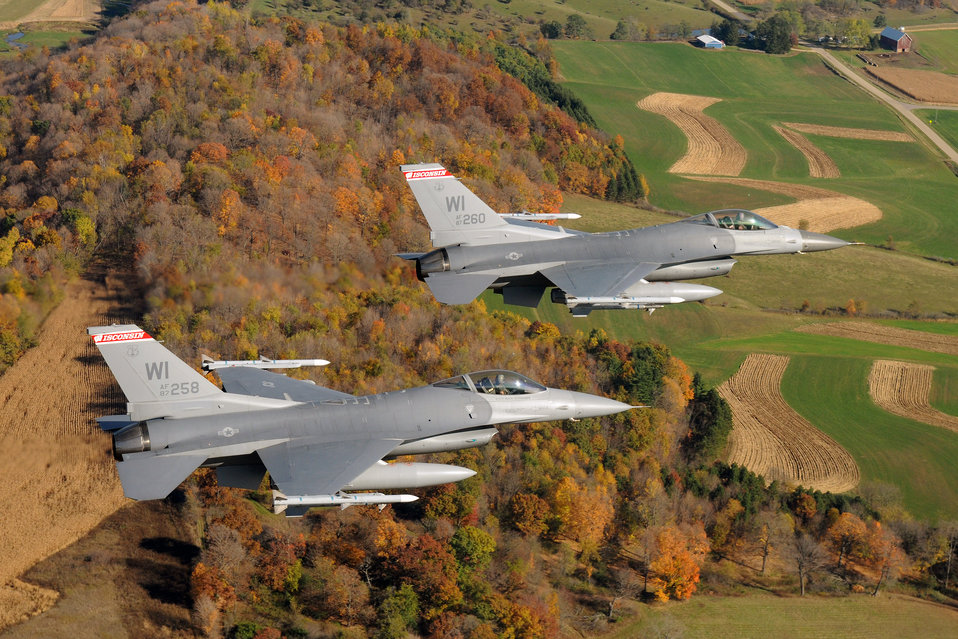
Guard F-16s intercept suspicious aircraft

A two-ship formation of F-16 Fighting Falcons like these, shown on a routine training mission, intercepted a suspicious aircraft April 6 as it flew into U.S. airspace. The F-16s are from the Wisconsin Air National Guard's 115th Fighter Wing.